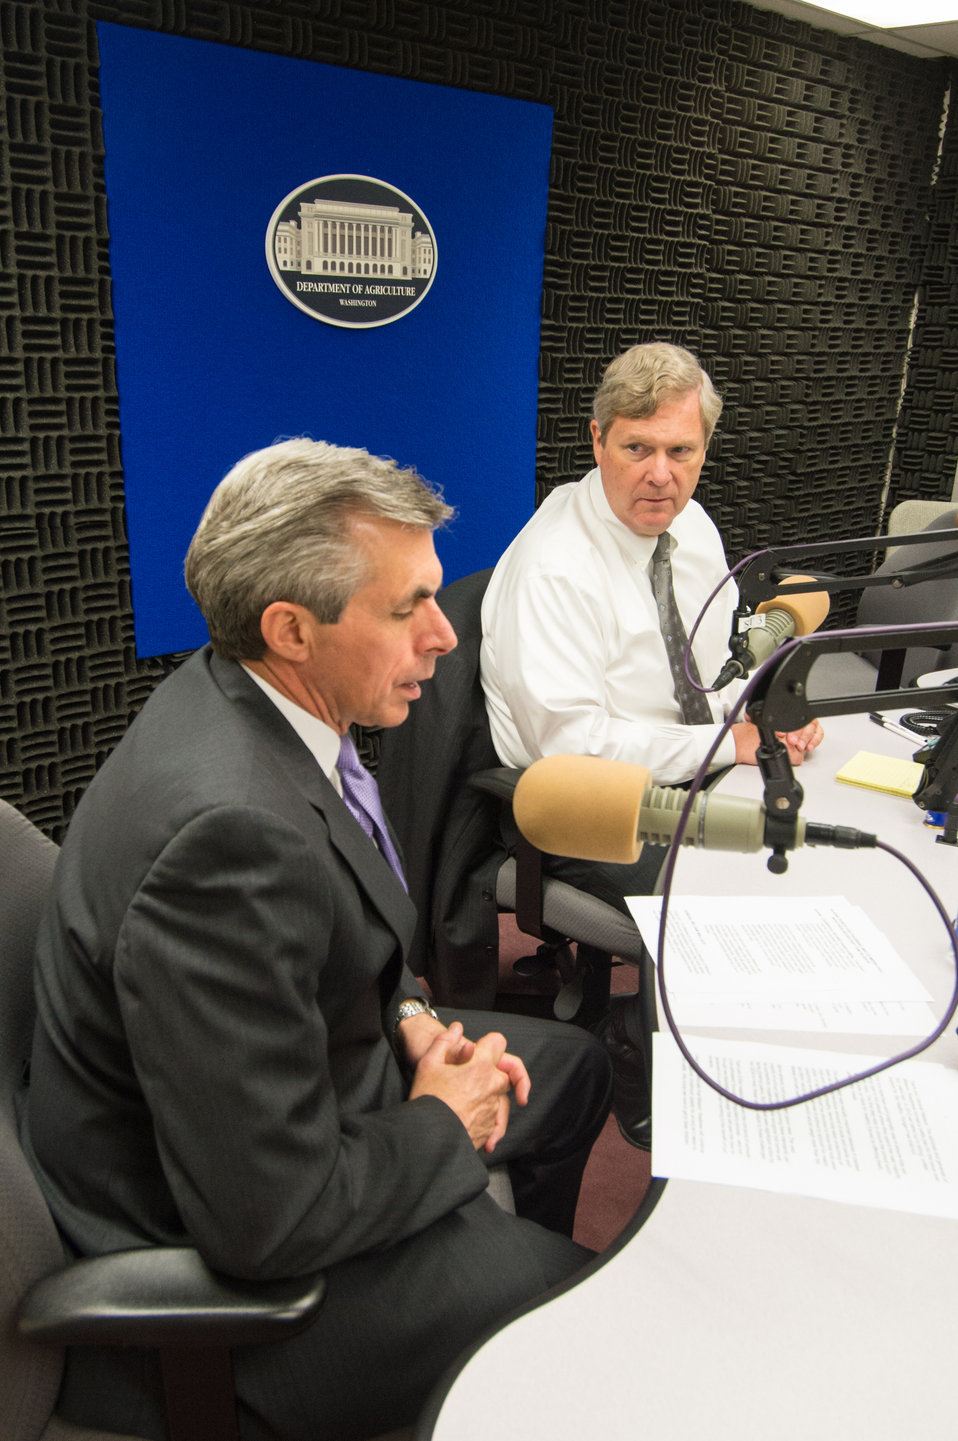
Agriculture Secretary Tom Vilsack and U.S. Navy Rear Admiral James Barnett (retired) hold a media call in the U.S. Department of Agriculture (USDA) radio studio in Washington, D.C. on Thursday, May 22, 2014. Secretary Vilsack and Barnett joined U. S. Army General William Wallace (retired) and Burke County, GA School Food Service Director Donna Martin to discuss recent attempts to undermine child nutrition standards and the impact that has on military readiness.